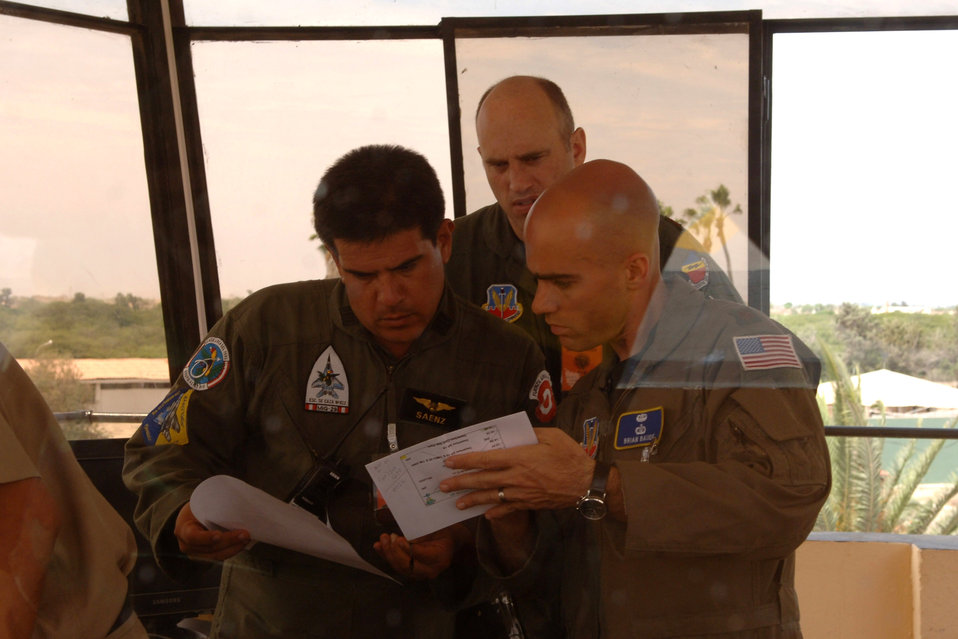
Skills from past career field come into play during exercise

Maj. Brian Baude discusses flight plans with Peruvian Maj. Juan Saenz during Exercise Falcon and Condor 2007 Feb. 14 in Chiclayo, Peru. The a joint military exercise provides the U.S military the opportunity to work together and build relationships with military and civilian leaders of Peru. Major Baude is a combat airspace manager assigned to 12th Air Force and Air Forces Southern.